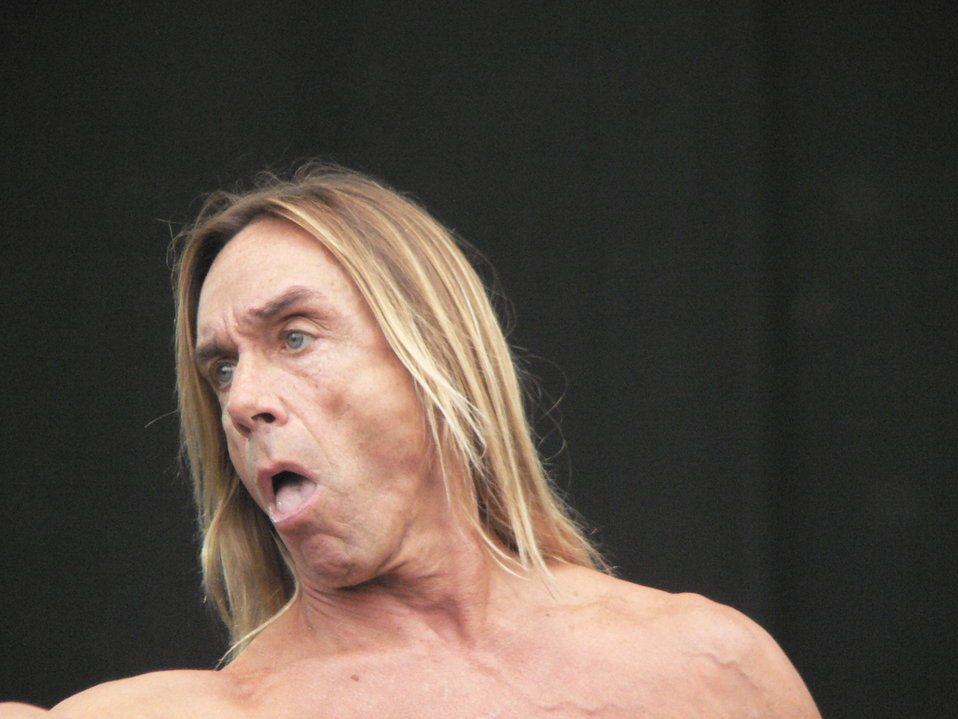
Sziget, Nagyszínpad, 2006 augusztus 15, 18 óra. A rocktörténelem egyik legnagyobb hatású együttese. A Stooges egyike a valóban legendás zenekaroknak, soha el nem évülő édes bűnökkel, máig érvényes munkássággal, fontos albumokkal, legendás koncertekkel és büntető slágerekkel. Az 1967-ben alakult zenekar (Iggy Pop - akkor még Iggy Stooges néven- , Ron Asheton, Scott Asheton és Dave Alexander) 1969-ben jelentette meg első albumát. A Stooges pszihodelikus, zsigeri gyökérrockos, garázsrockos, pre-punk zenéje millió zenekarra és irányzatra hatással volt a Sex Pistolstól a Gun”N and Rosesig, a Jane”s Addictiontól a Queens of Of The Stone Age-ig, a Red Hot Chili Pepperstől a Sonic Youthig. Eszünkbe juthatnak azonban a hazai előadók is: az URH, az Európa Kiadó vagy a Flash. Az 1947-es születésű Iggy Pop először 47 évesen koncertezett Magyarországon. Koncertet adott 2002-ben a Szigeten. 2004-ben egy ausztriai fesztiválon hajdani proto-punk együttesének, a legendás detroiti Stooges -nek a tagjai, az Asheton fivérek, a gitáros Ron és a dobos Scott, illetve Steve MacKay xaxofonos kísérték. (Az időközben elhunyt Dave Alexander basszista helyére egy másik punklegenda, Mike Watt ugrott be). Csak az 1969-es The Stooges és az 1970-es Fun House nagylemezek klasszikus dalait játszották, meg néhány új számot, amit a 2003-as újjáalakulás idején írtak Iggy Skull Ring albumára. Ha minden igaz, 2007-re egy komplett studiólemezt is felvesznek együtt és Elijah Wood főszereplésével mozifilm is készül Iggyről. Aki hatvanévesen is vadul ugrált és ordítozott a SZIGET Nagyszínpadán. A felvétel a színpad közepéhez vonalához közel, az első sorból készültek. A kép korábban Creativ Commons alatt megjelent a Metapolisz 6 DVD -n (ISBN: 963-06-0653-4).